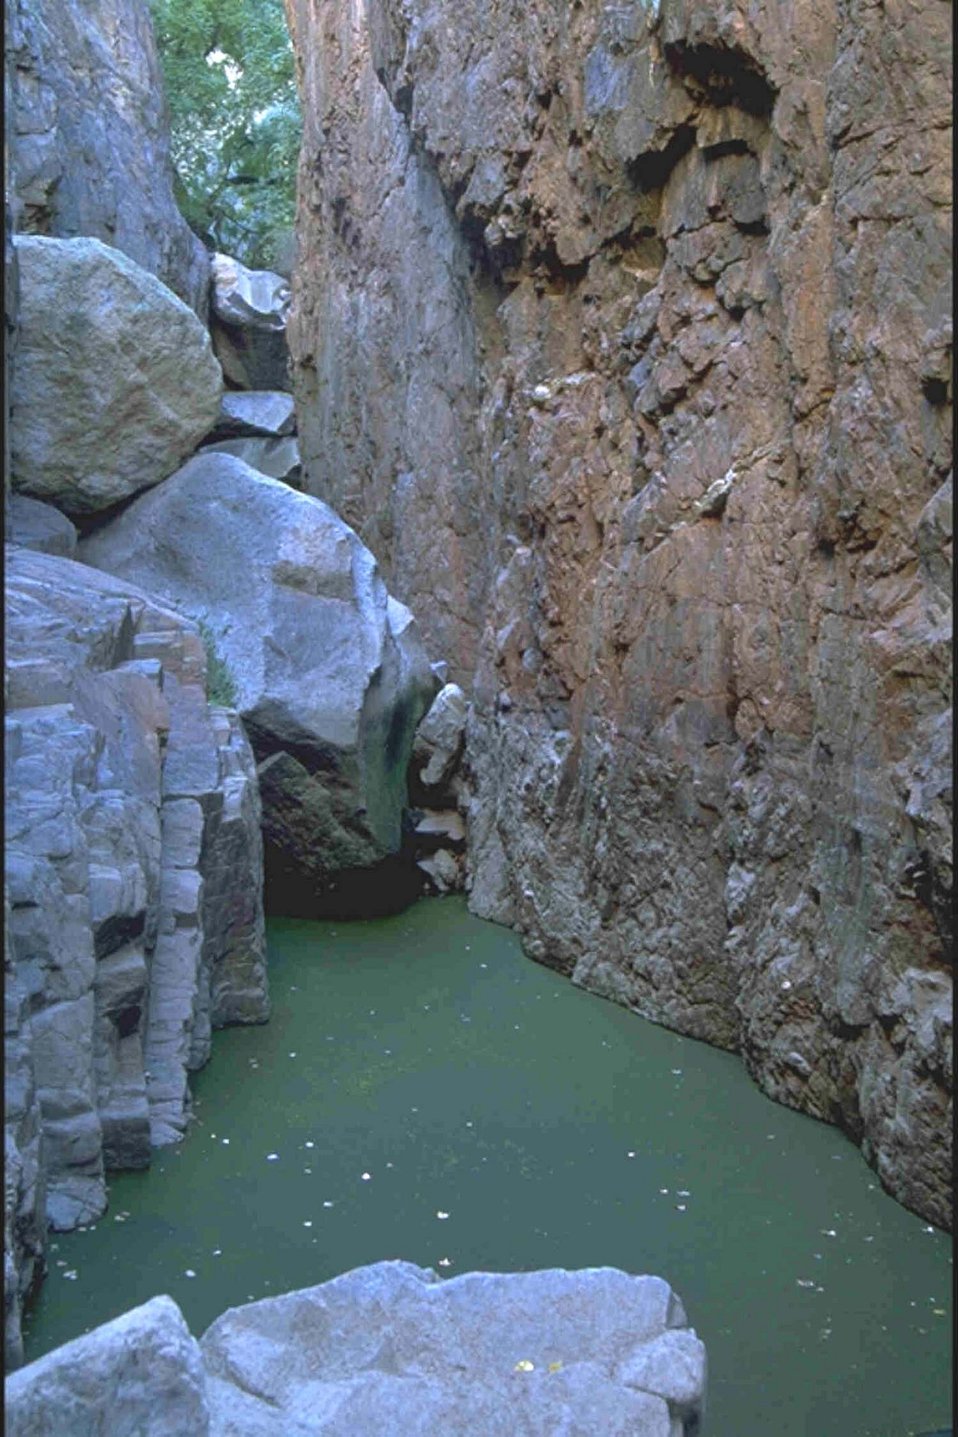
A pool in Hells Half Acre Canyon.